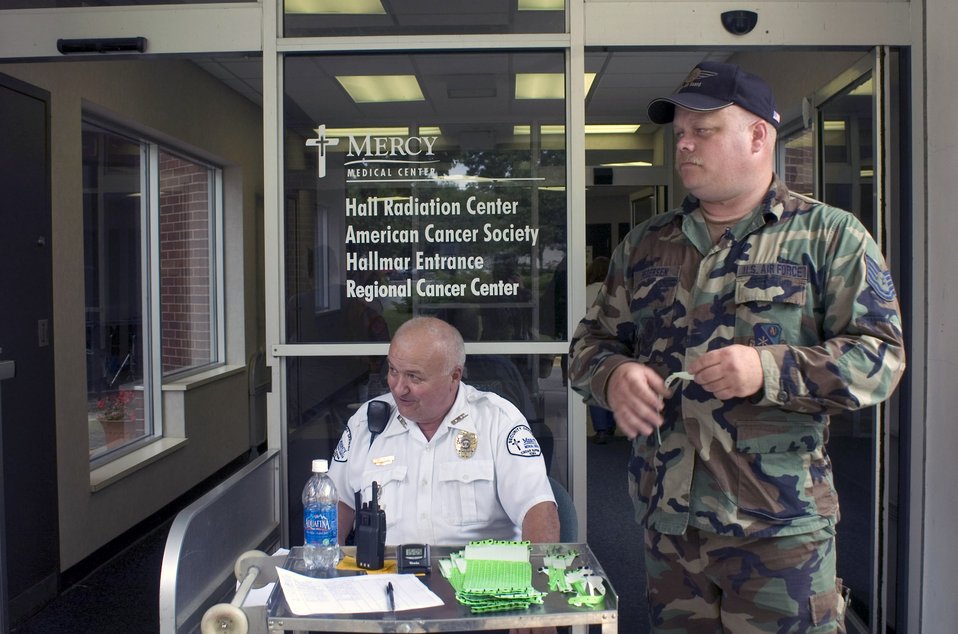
Air National Guard shores up as flood recedes

Tech. Sgt. Gregg Pedersen stands post outside the Mercy Medical Center in Cedar Rapids, Iowa, June 15. Sergeant Pedersen checks employees into the hospital by having workers sign in and wear a green wristband indicating they were cleared through a checkpoint. More than 150 Airmen arrived in Cedar Rapids today to help secure and recover areas that were affected by flood waters. Sergeant Pedersen is assigned to the 185th Air Refueling Wing located in Sioux City, Iowa.